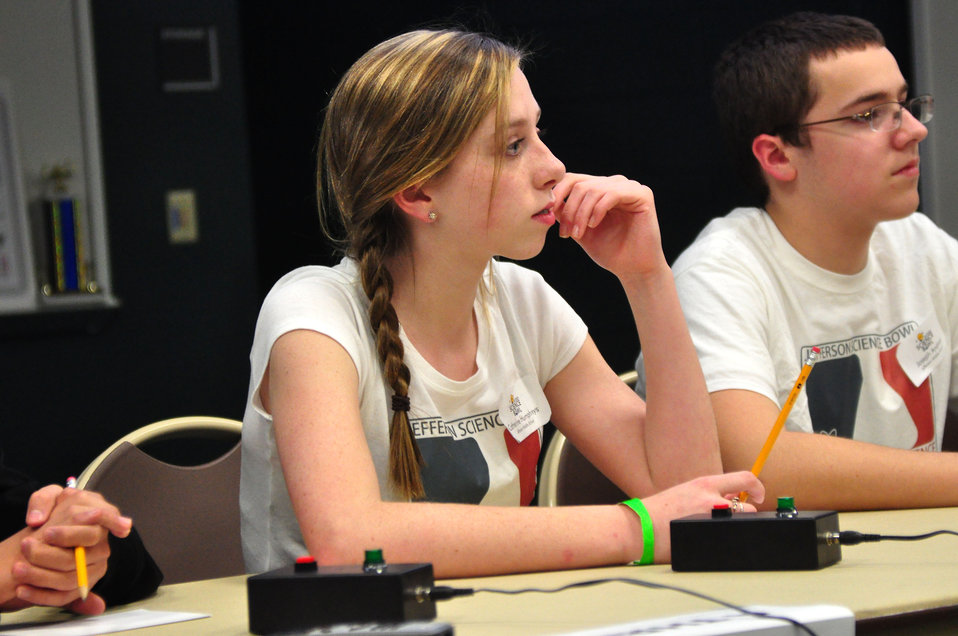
Jefferson Middle First Place DOE Middle School Science Bowl

14-017 DOE photo Lynn Freeny 2-1-2014 Oak Ridge Tennessee